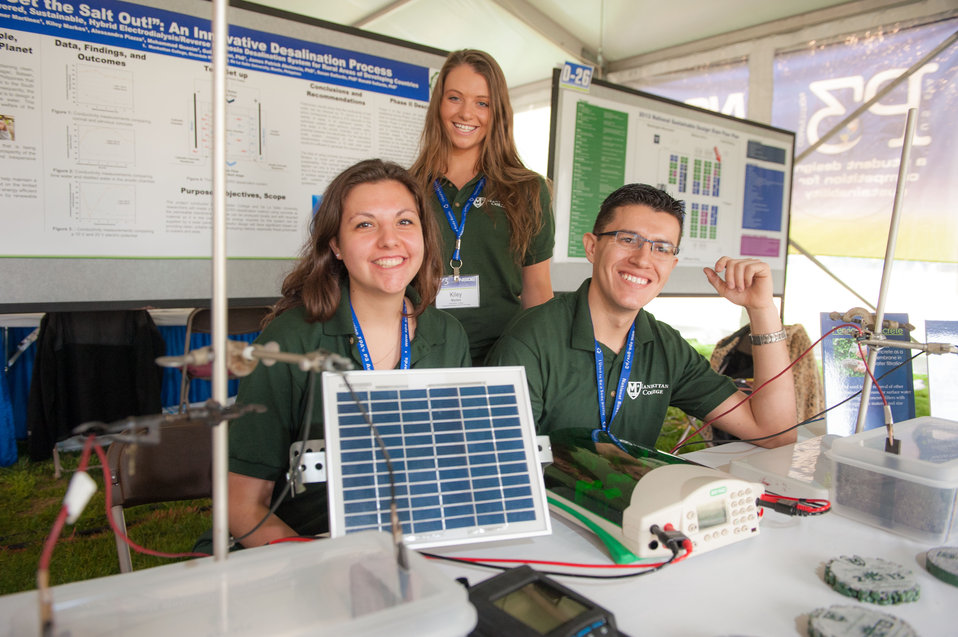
April 18, 2013 - P3 Design Expo, Manhattan College

Get the Salt Out! The Manhattan College team displays their solar panel used in their novel desalination process.

The lack of clean drinking water is one of the most significant health issues in many countries around the world. For communities located near the sea, saltwater could be a potential source of drinking water if the current treatment technologies were more affordable. Working with a university in the Philippines, Manhattan College students are developing a treatment system that uses concrete made from local materials and solar power to remove salt from seawater to produce potable water.

Manhattan College P3 page
Manhattan College Team’s Facbook Page

People Prosperity and the Planet: National Sustainable Design Expo on the National Mall 18-19 April 2013